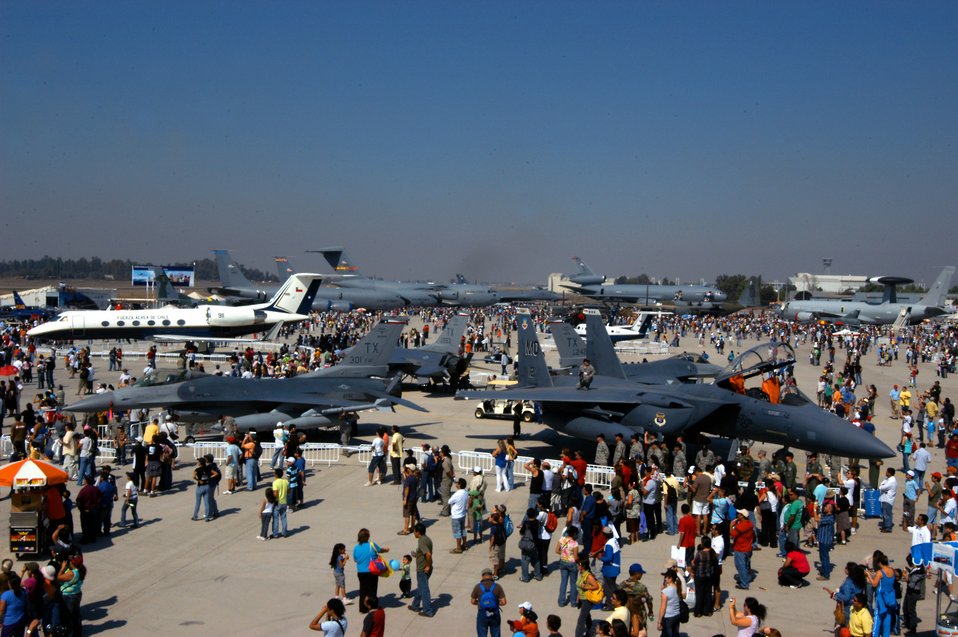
Bird's eye view

The crowd mingles around U.S. Air Force aircraft at FIDAE 2008, one of the largest air shows in South America, in Santiago, Chile. A host of aircraft and Airmen also participated in Exercise Newen 2008, which emphasizes cooperation between the U.S. and Chilean militaries.